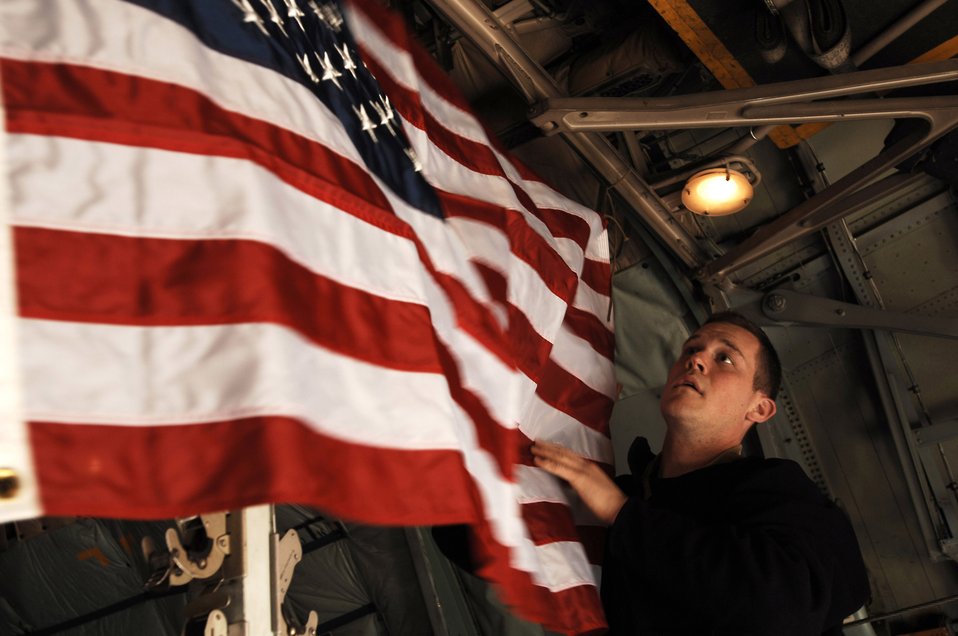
Airmen take Soldiers to the battlefield

1st Lt. Matthew Macfarlane hangs up an American flag in the cargo area of a C-130 Hercules prior to takeoff of a mission Feb. 4 at a Southwest Asia air base. The flag belongs to one of Lieutenant Macfarlane's ROTC instructors and will be displayed while flying over Iraq on a mission in support of Operation Iraqi Freedom. Lieutenant Macfarlane is a C-130 pilot deployed with the 737th Expeditionary Airlift Squadron.